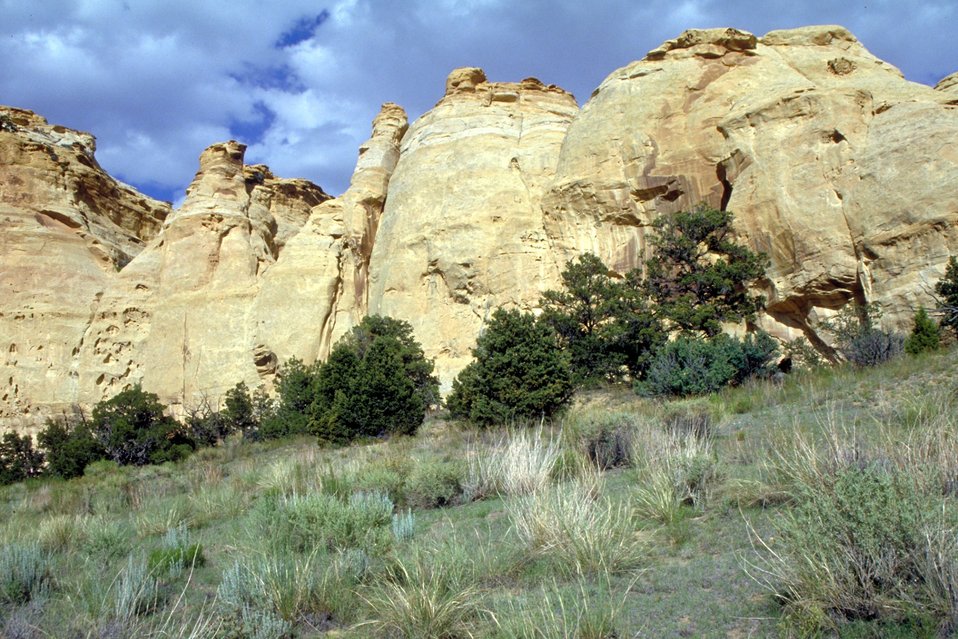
Head of Sinbad, San Rafael Swell